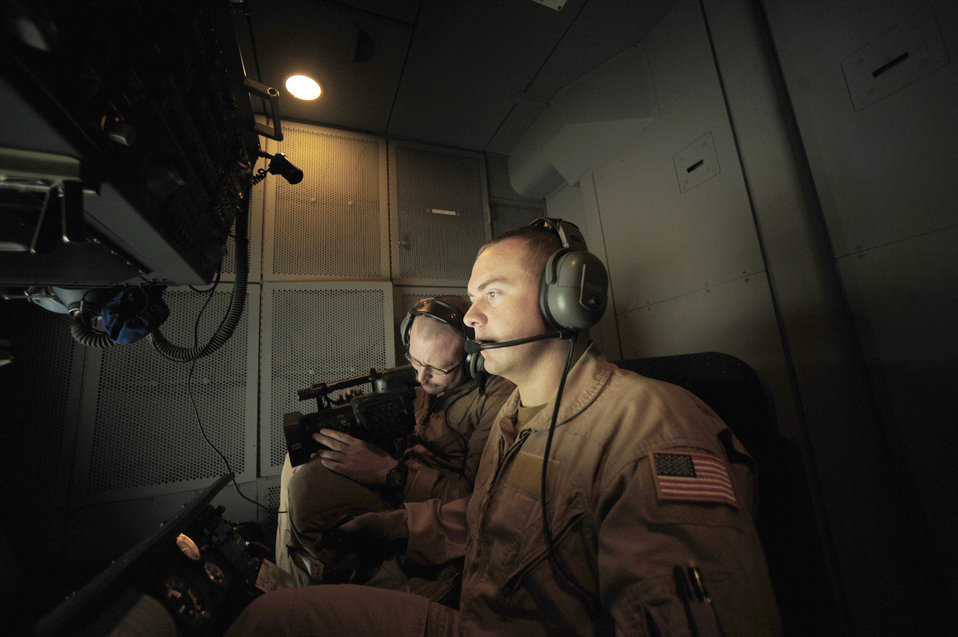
Refueling the joint fight

Staff Sgt. Erin Keogh communicates with pilots during aerial refueling Nov. 25, 2010, over Afghanistan in support of Operation Enduring Freedom. Sergeant Keogh is a KC-10 Extender loadmaster assigned to the 908th Expeditionary Air Refueling Squadron.